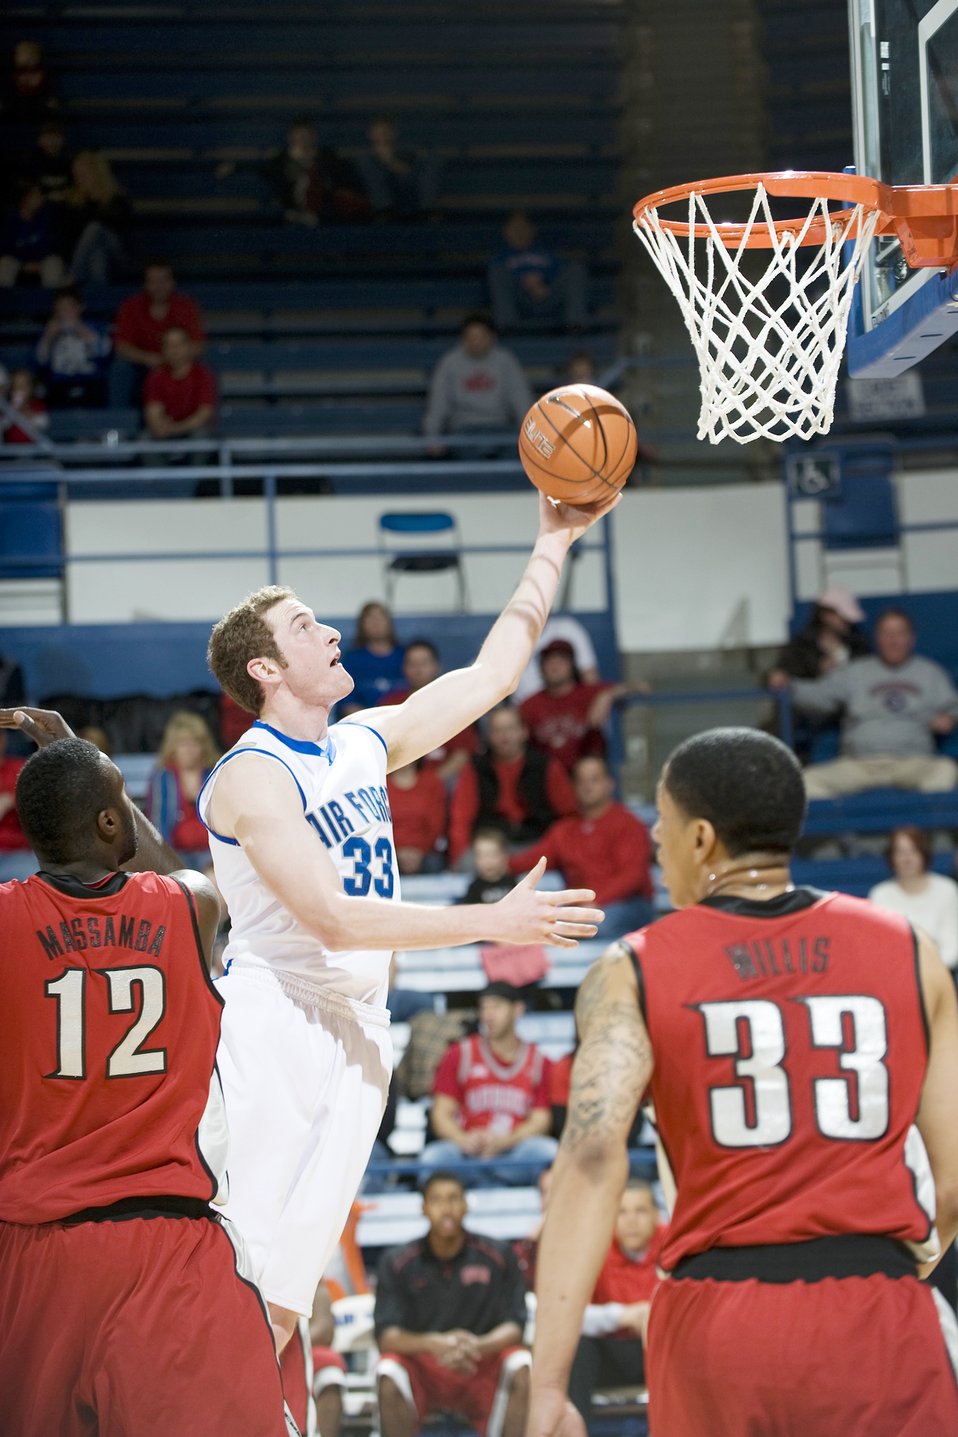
Falcons fall to Running Rebels

Air Force senior center Mike Mclain goes for two during the Feb. 27, 2010, game against the University of Nevada Las Vegas Running Rebels at the U.S. Air Force Academy's Clune Arena. UNLV went on to defeat the Falcons for the fifth consecutive time by a score of 77 to 47.